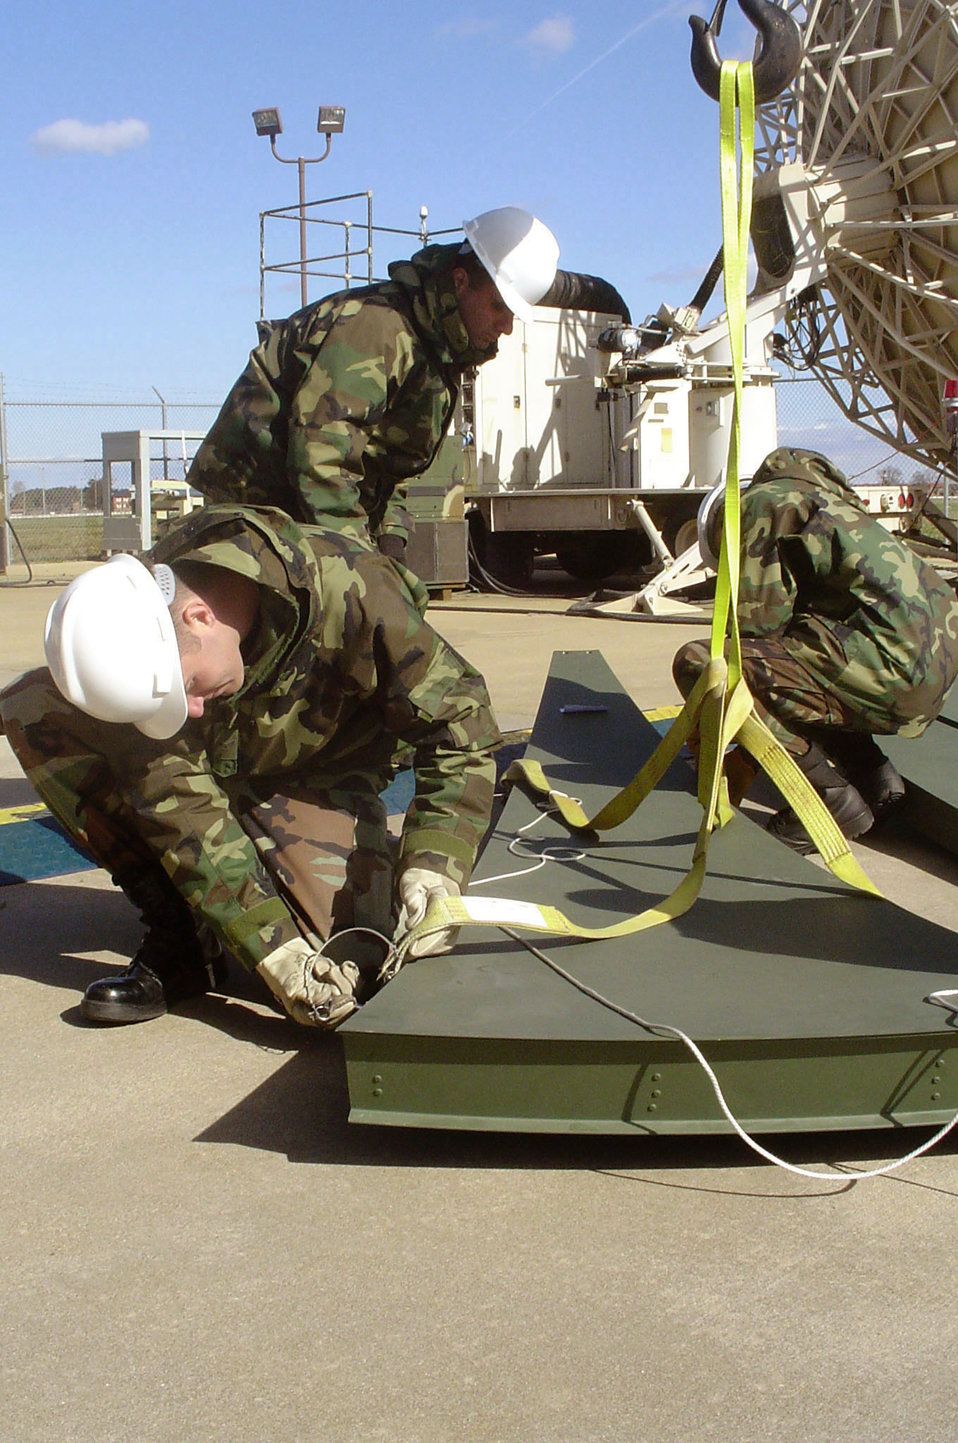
New satellite terminal provides real-time intelligence

LANGLEY AIR FORCE BASE, Va. -- Senior Airman Lee Scott hooks a satellite dish panel to a crane here during installation of a Transportable Medium Earth Terminal II satellite communications system. The system will speed the flow of information to warfighters from U-2 Dragon Lady reconnaissance flights. Sergeant Scott is a satellite communications maintenance technician assigned to the 10th Intelligence Squadron.